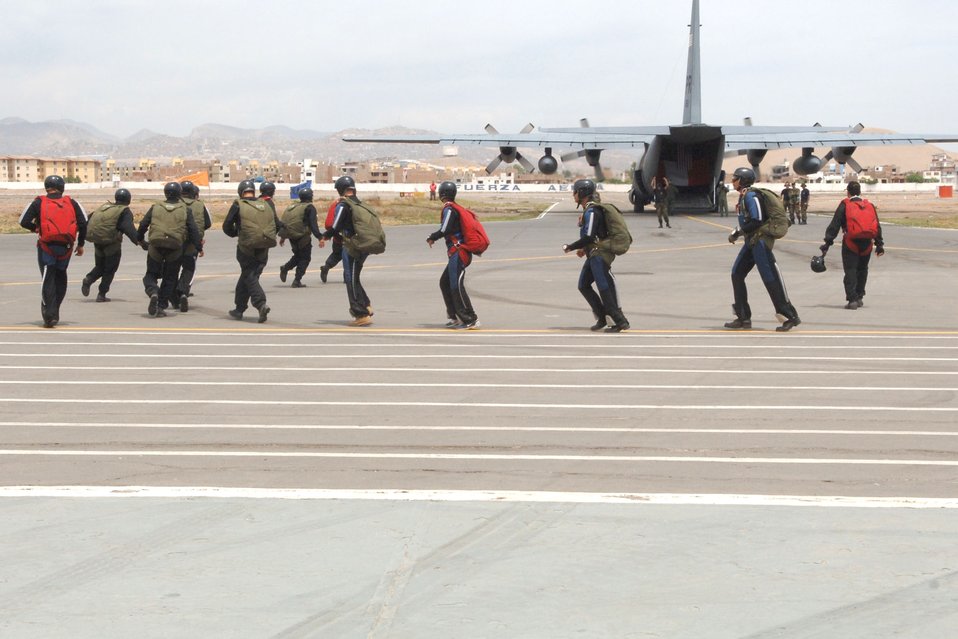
Airmen kick off part two of Falcon Condor 2007

A crew of 13 Peruvian special forces members load a U.S. C-130 Hercules from the Puerto Rico Air National Guard Feb. 17 in preparation for jump during the joint air show at Las Palmas Air Force Base in Lima, Peru. Falcon Condor 2007 is a joint exercise and air show that directly supports the U.S. Southern Command's engagement goals.